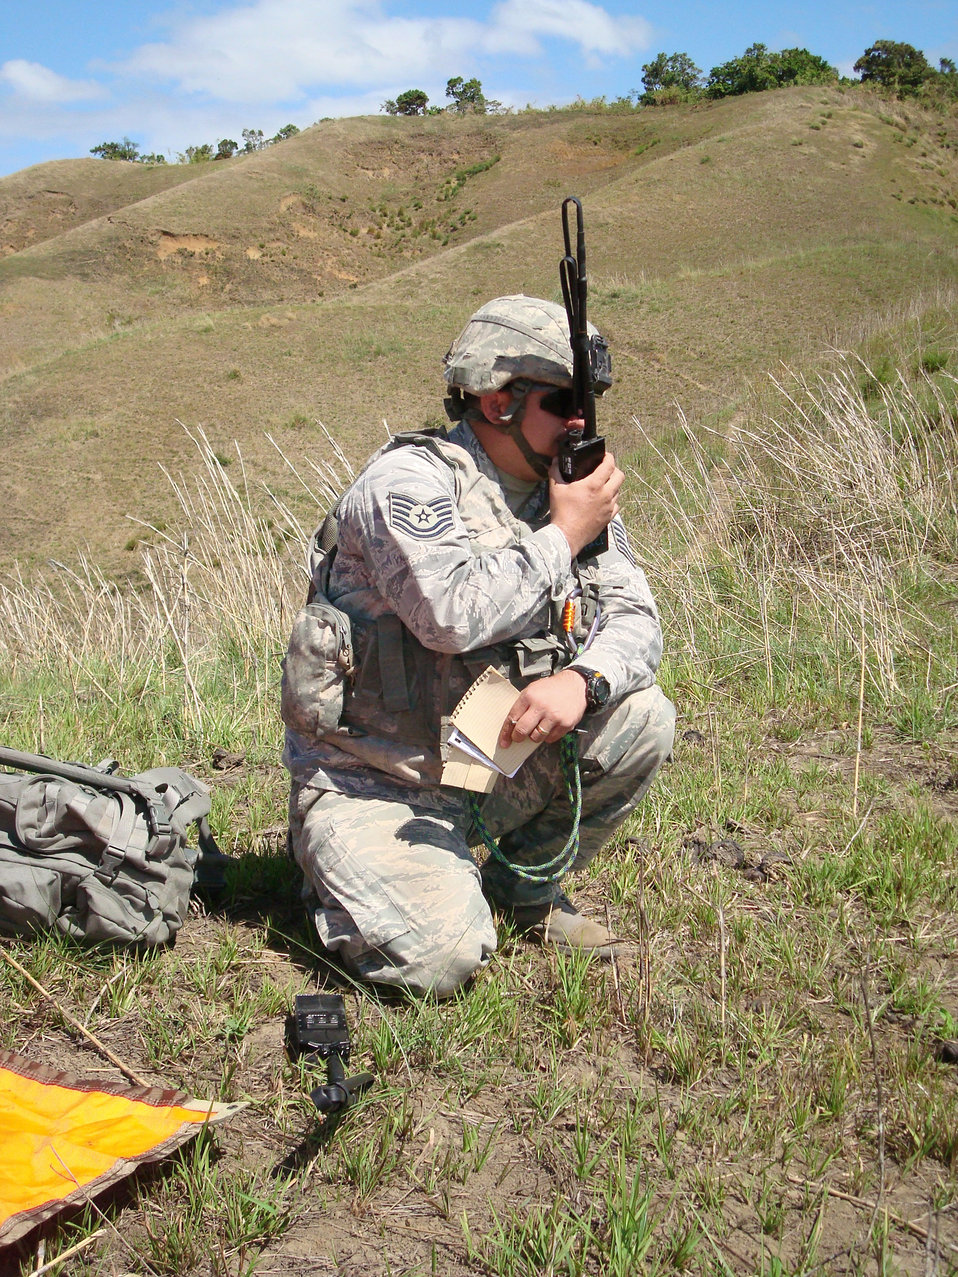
Exercise key to Hawaiian air support center upgrade

Staff Sgt. Travis Stricker communicates with various Air Force and Philippine air force aircraft ensuring a clear air flow and deconflicting aircraft altitudes during Exercise Balikatan 2010 March 20, 2010, in the Philippines.. Balikatan is an annual bilateral exercise designed to increase interoperability between the U.S. and Philippine air forces, and exercises the two nation's ability to operate together when responding to natural disasters. Sergeant Stricker is assigned to the 25th Air Support Operations Squadron deployed to the Philippines from Joint Base Pearl Harbor-Hickam, Hawaii.